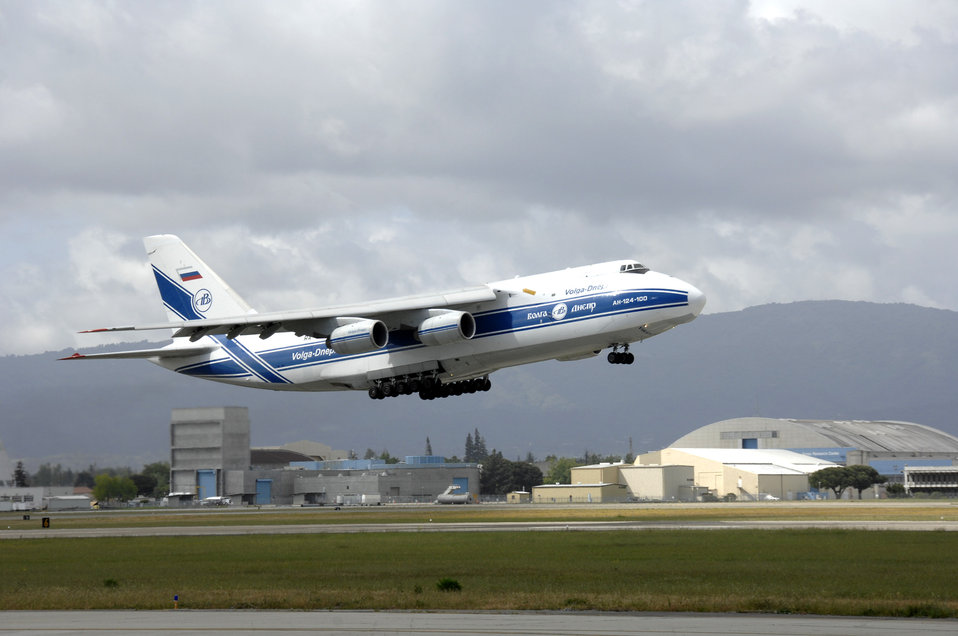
Russian aircraft transports ANG rescue helicopters

A Russian Volga-Dnepr AN-124 long-range heavy transport aircraft takes off from Moffett Federal Airfield, Calif., April 22. The contracted AN-124 transported 129th Rescue Wing deployment cargo to Afghanistan because the high operations tempos of Operations Iraqi Freedom and Enduring Freedom have kept C-17 Globemaster III and C-5 Galaxy aircraft fully engaged.